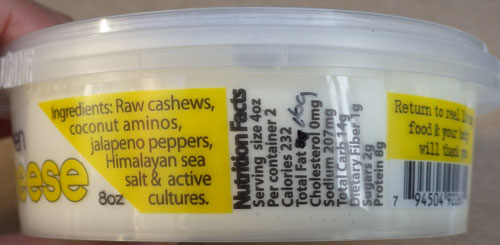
RECALLED – Non-dairy cashew cheese products

ecember 31, 2013 – The Cultured Kitchen® Voluntarily Recalls Cashew Cheese Due To Possible Risk Of Contamination From Salmonella
Photos.